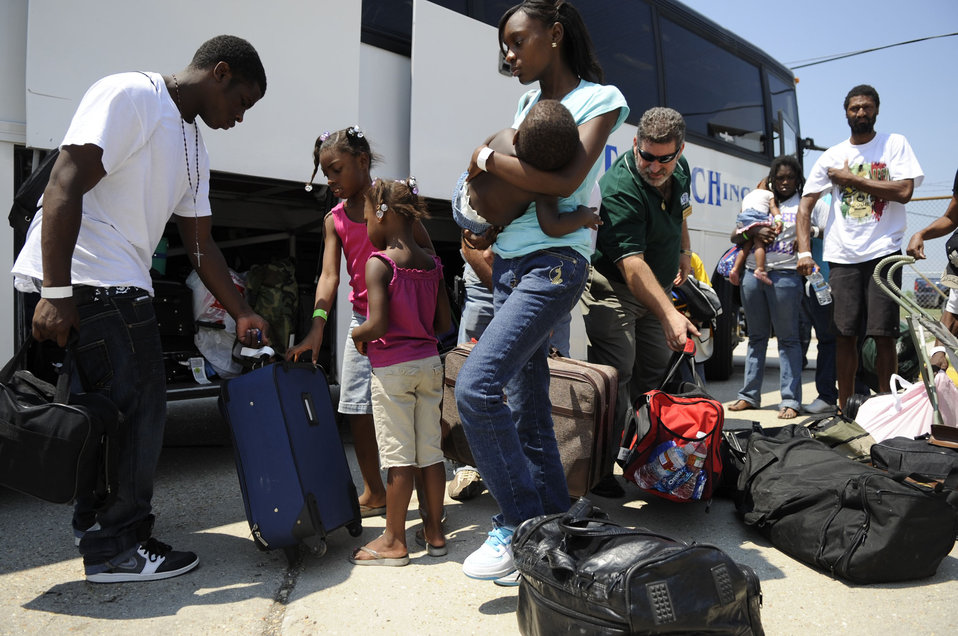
Airmen there as hurricane evacuation begins

Evacuees leaving before Hurricane Gustav hits the Gulf Coast arrive at the Louis Armstrong International Airport in New Orleans Aug. 30. They will be boarding flights that officials with the Federal Emergency Management Agency and Department of Defense have chartered to transport citizens who otherwise could not leave on their own to destinations safely outside the hurricane's path.